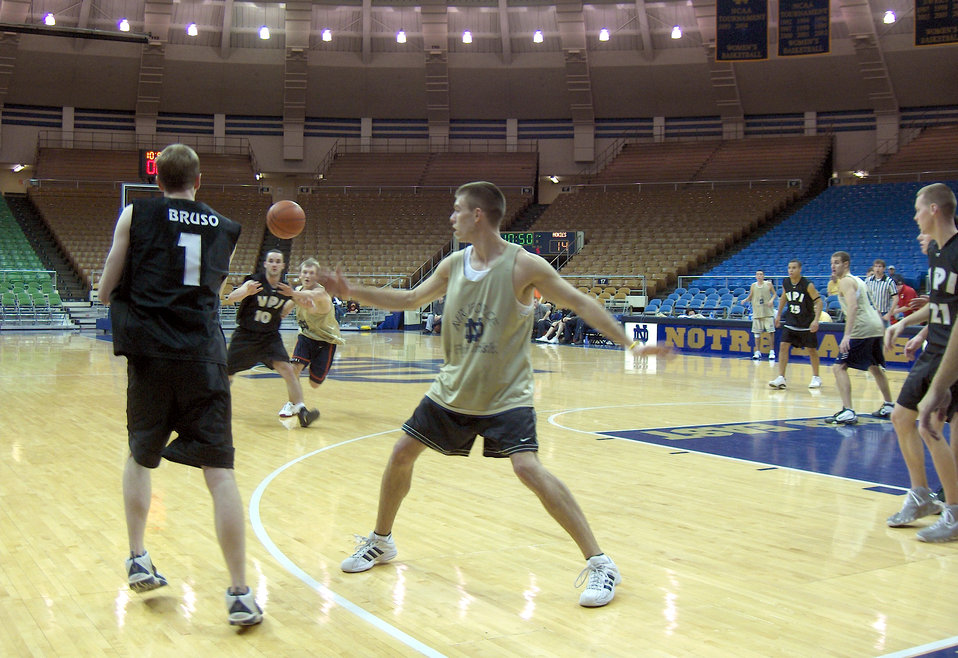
56 teams compete at ROTC basketball tourney

SOUTH BEND, Ind. -- Cadets from Virginia Polytechnic Institute try to penetrate the defenses of the Notre Dame Air Force A-team during the championship game of the 19th Flying Irish Basketball Invitational here Feb. 6. The Notre Dame men defended their championship title with a victory over VPI, 31-23. The tournament, which featured 54 teams this year, is the nation's largest athletic ROTC event.